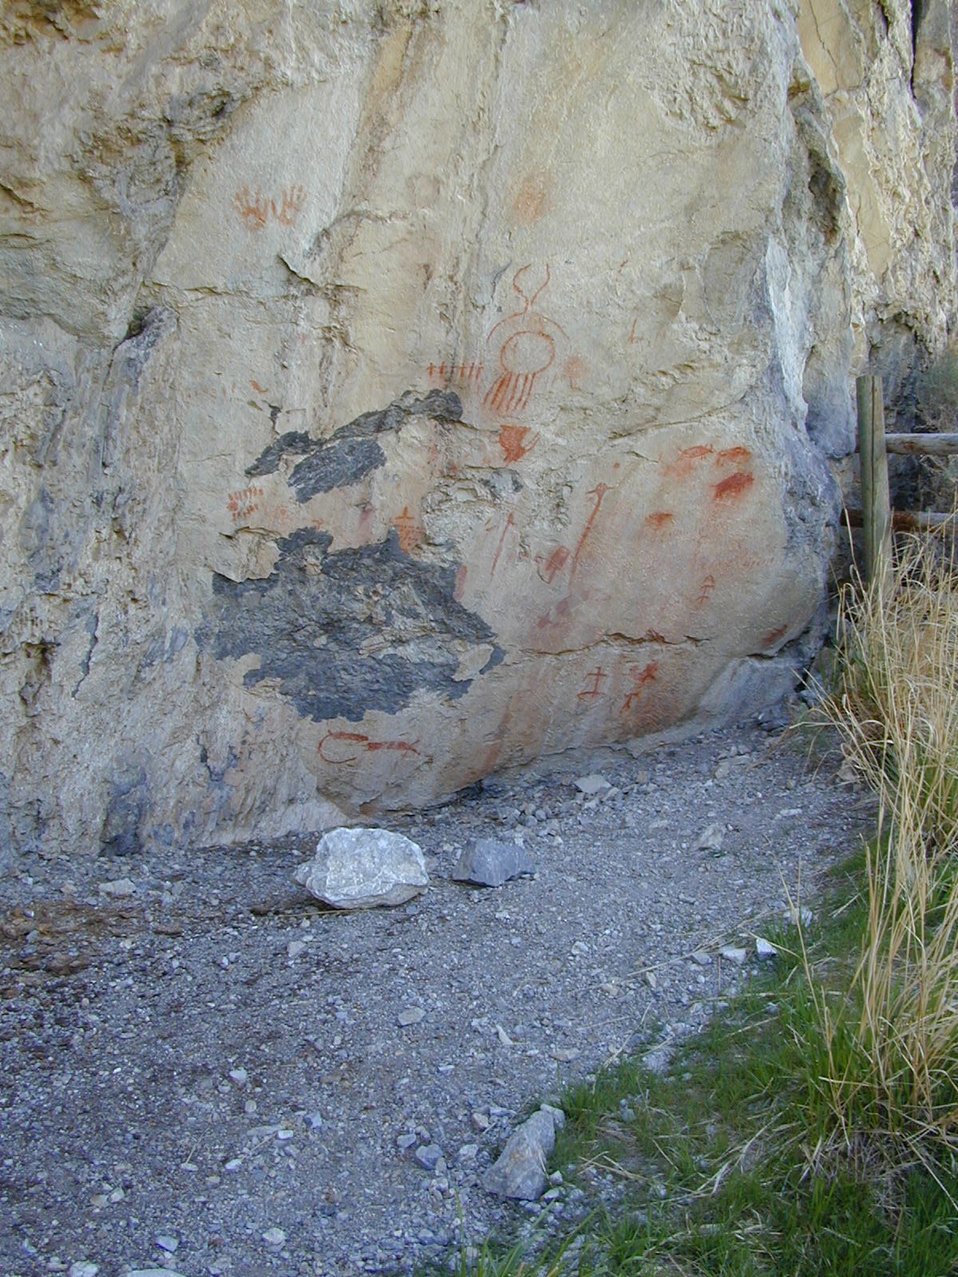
Birch Creek Valley Idaho Falls Field Office USRD Upper Snake River District